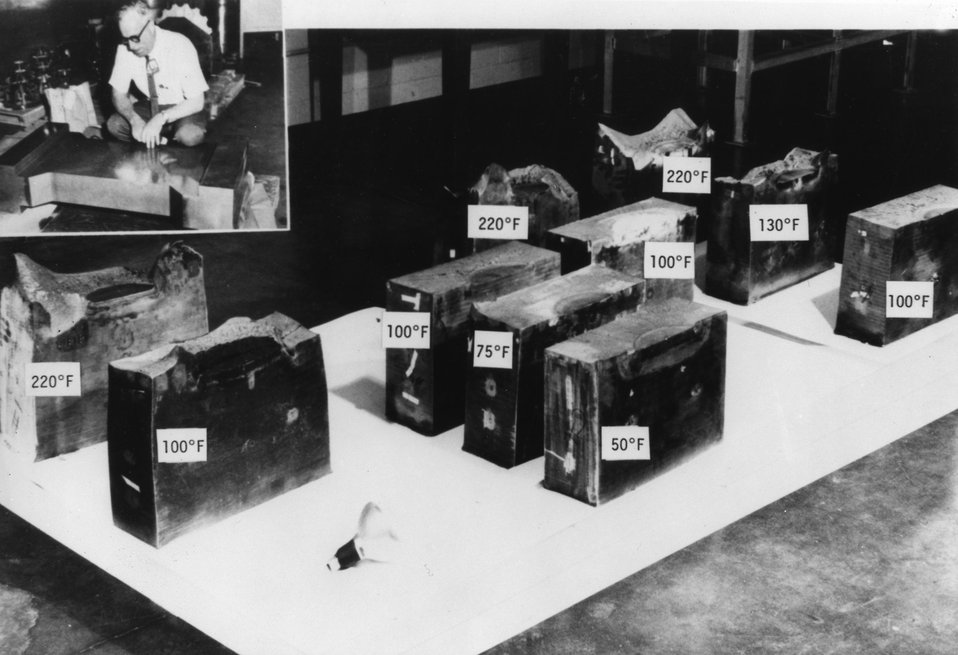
Since commercial nuclear reactor power stations will have pressure vessels with wall thicknesses of from 6 to 12 in., the Atomic Energy Commission is sponsoring investigations of the fracture characteristics of such vessels. c. 1972